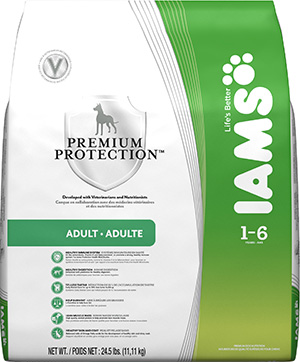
RECALLED – Dog and Cat foods - Dry

August 14, 2013 – Product Recall – P&G Voluntarily Recalls Limited Quantity of Dry Pet Food Due to Possible Health Risk.